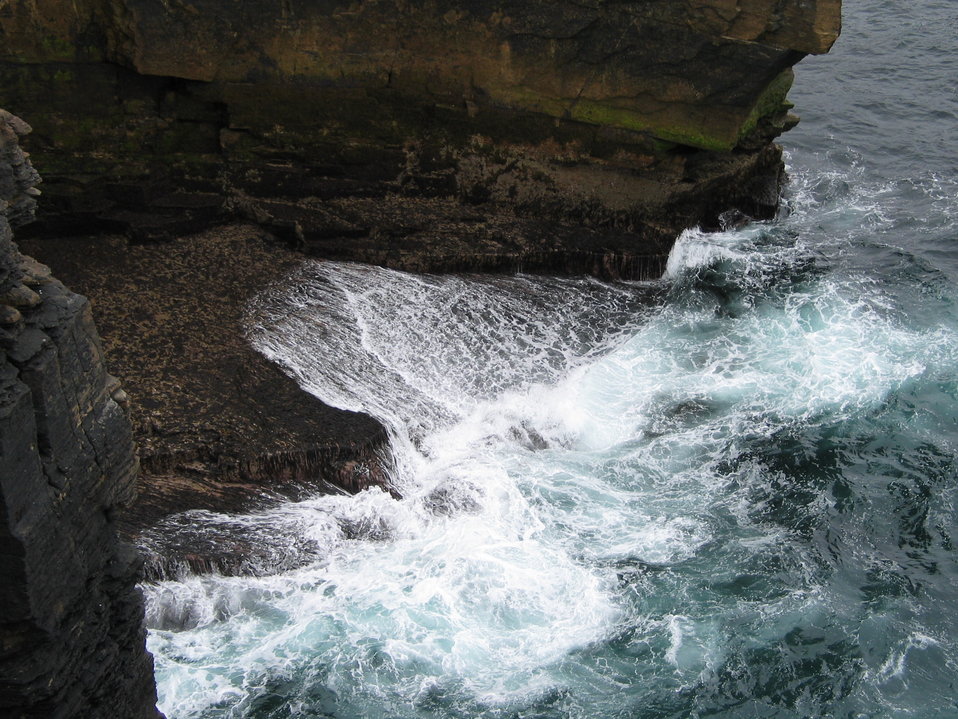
Yesnaby, Orkney, Scotland